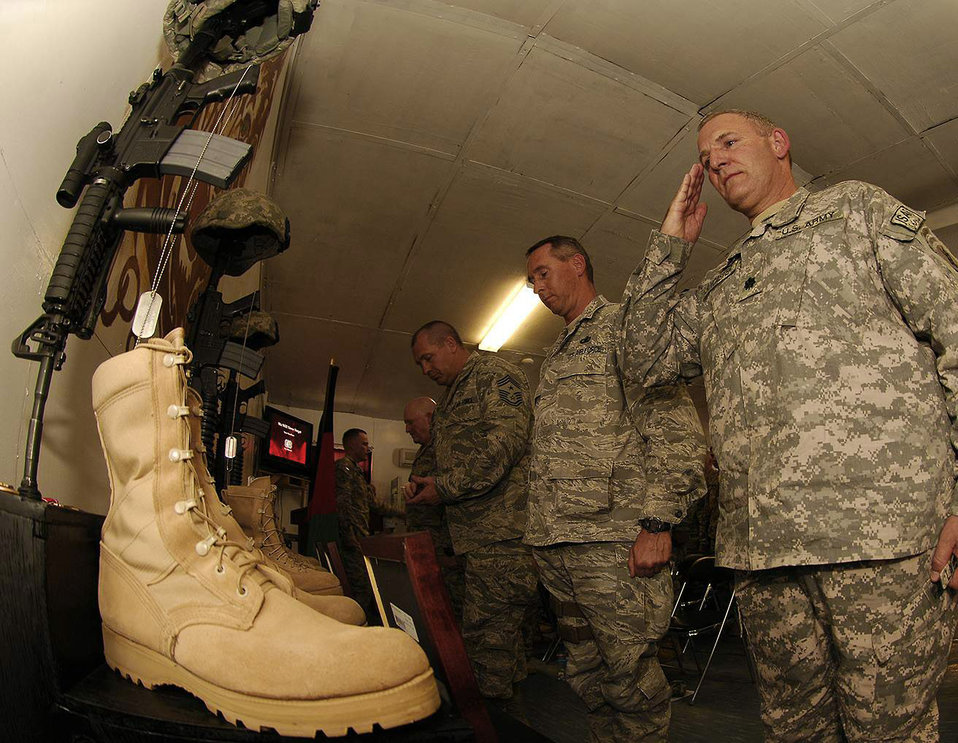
Panjshir reconstruction team bids farewell to fallen comrades

Army Lt. Col. Steve Lancaster renders a salute to fallen comrade Lt. Col. Mark Stratton during a May 31 memorial at Forward Operating Base Lion, Afghanistan.. Four members of the reconstruction team were killed May 26 when their convoy vehicle was struck by a suicide car bomber. More than 75 American servicemembers and Afghan leaders paid tribute to Colonel Stratton, the team's commander, Army Master Sgt. Blue Rowe, the unit first sergeant, Senior Airman Ashton Goodman, the convoy driver, and Abdul Samad, a local legal expert. Colonel Lancaster is the acting commander for the Panjshir Provincial Reconstruction Team.